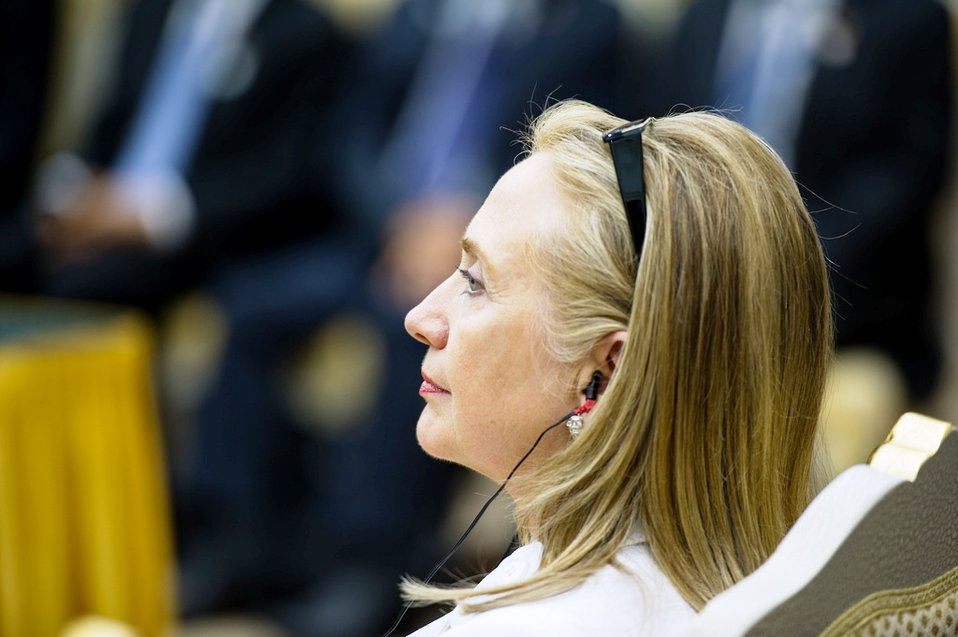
Secretary Clinton Participates in the ASEAN-U.S. Leaders' Meeting

U.S. Secretary of State Hillary Rodham Clinton participates in the ASEAN-United States Leaders' Meeting at the Peace Palace in Phnom Penh, Cambodia, November 19, 2012.